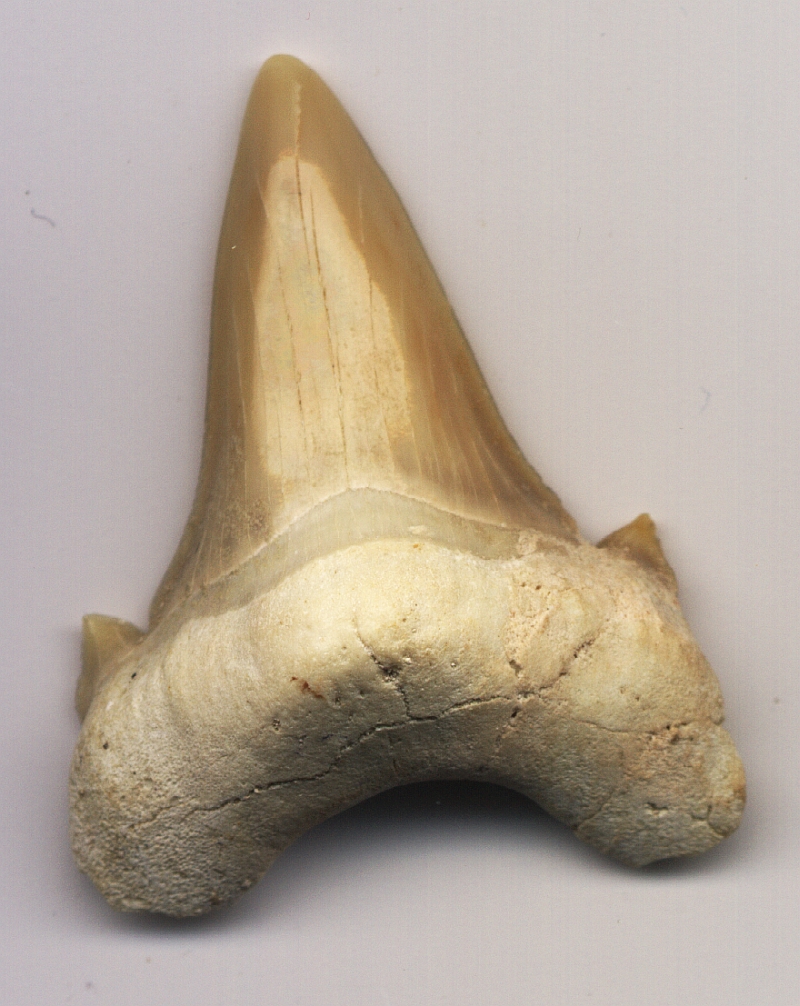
fossiler Haifischzahn. selbst fotografiert am 22.11.2004 Fotograf: Richard Seefeld Freigegeben für jeden und alles, sowie gemeinfrei und nach GNU-FDL